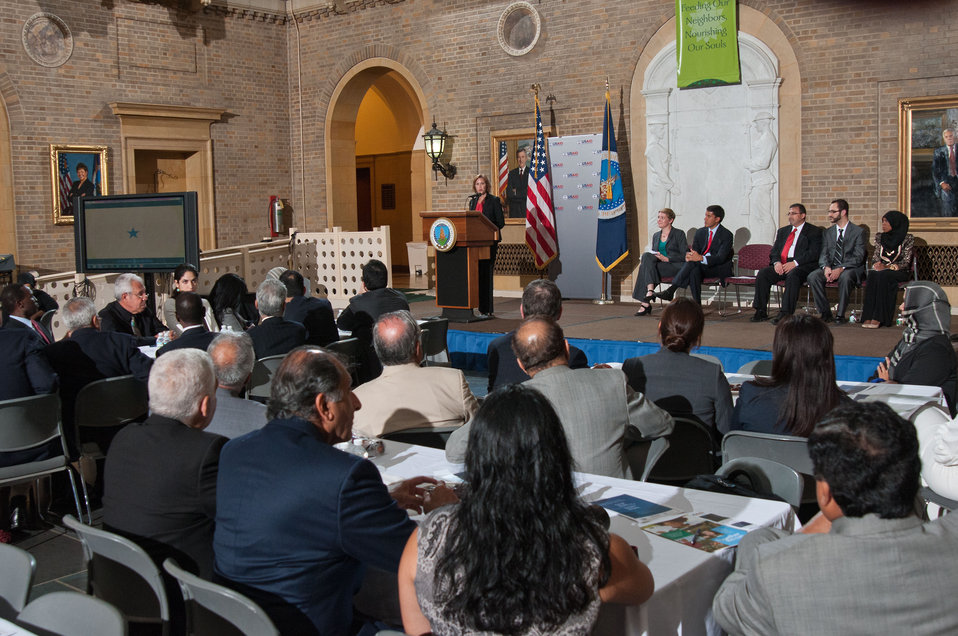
Agriculture Deputy Under Secretary for Farm and Foreign Agricultural Services Darci Vetter spoke at the Iftar event, co-sponsored by the Iftar celebration, co-sponsored by the U.S. Department of Agriculture, U.S. Agency for International Development (USAID) and Islamic Relief USA, on Tuesday, August 7, 2012, in the USDA Whitten Building, in Washington, D.C. Ramadan is the month of fasting, intensive prayer, sacrifice and worship for Muslims around the world. Throughout this month, Muslims fast during the day, abstaining from consuming food from dawn to dusk and using this time to purify spiritually. Fasting reminds Muslims of the poverty and hunger suffered by many in the United States and worldwide. It is a connection with those who are hungry not through devotion, but through the many global factors that lead to hunger and famine. Iftar is the meal at which Muslims break their fast at sunset, usually by eating dates, according to the Prophetic tradition.